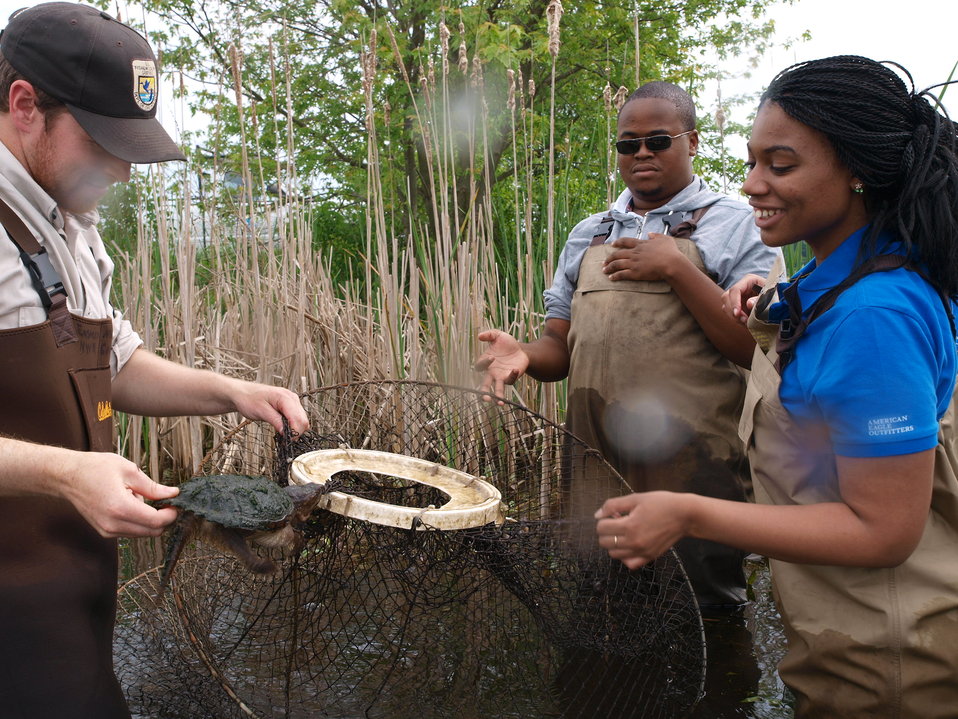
Biology Unit

Shanita has no fear....... Gotta keep our eye on her.